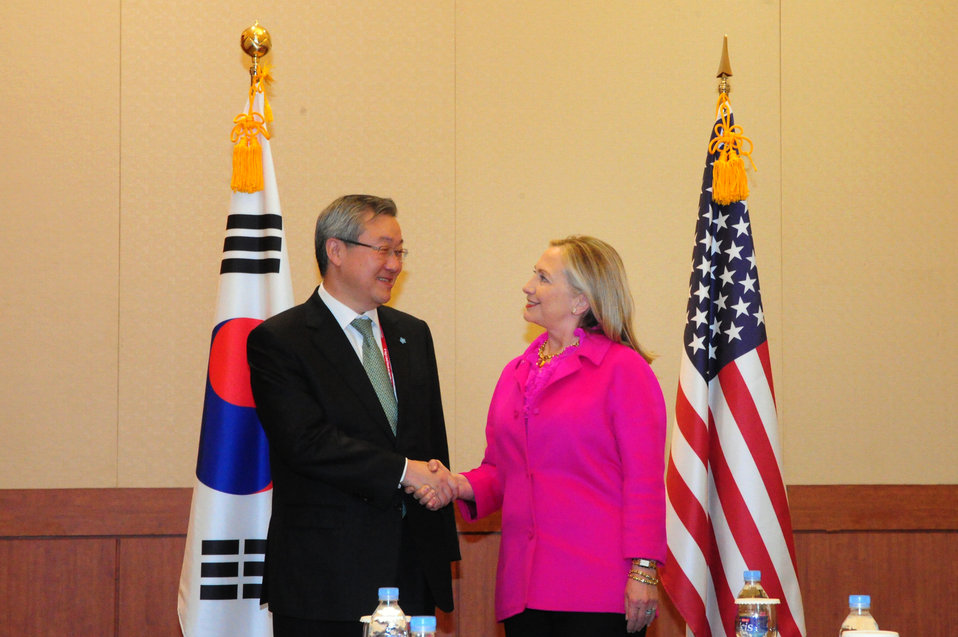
Secretary Clinton Meets With South Korean Foreign Minister Kim

U.S. Secretary of State Hillary Rodham Clinton with Korean Foreign Minister Kim Sung-hwan in Busan, South Korea, on November 30, 2011.